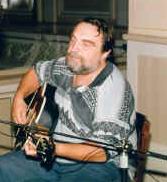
Čeština: Vlastní snímek z rodinného alba a vystoupení Jardy Wykrenta v Městském domě v Přerově